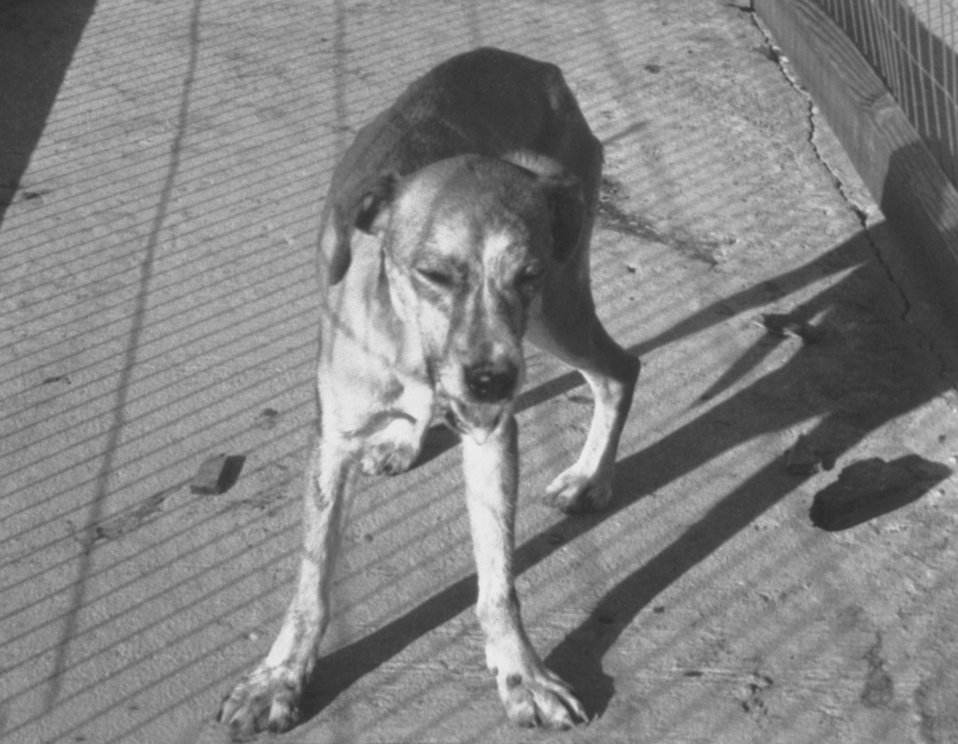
This rabid dog has saliva dripping from the mouth, which is a primary indicator for the presence of this disease.